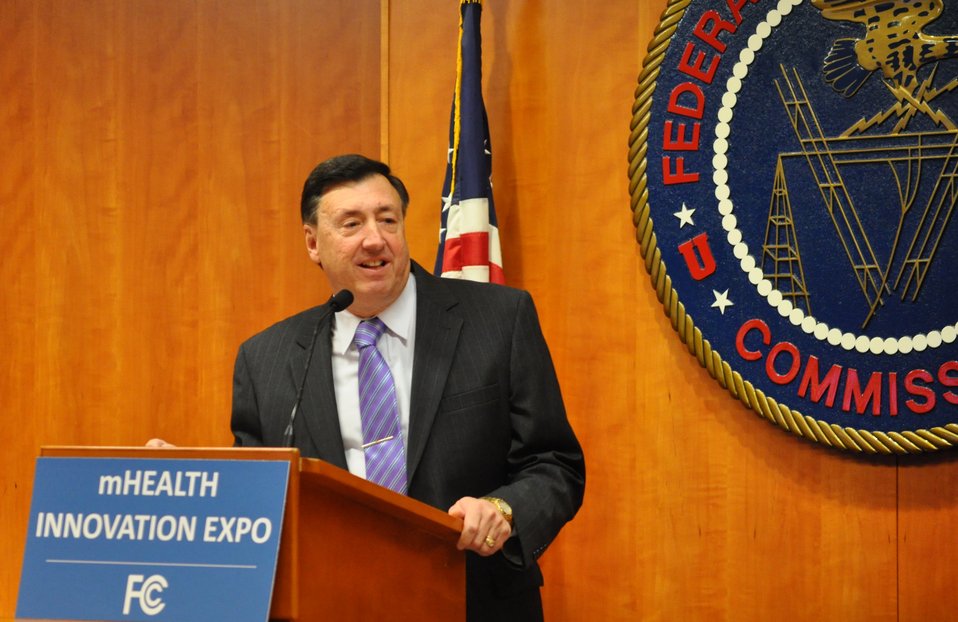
12.6.13 mHealth Innovation Expo

Julius Knapp, Chief, Office of Engineering and Technology (OET), FCC